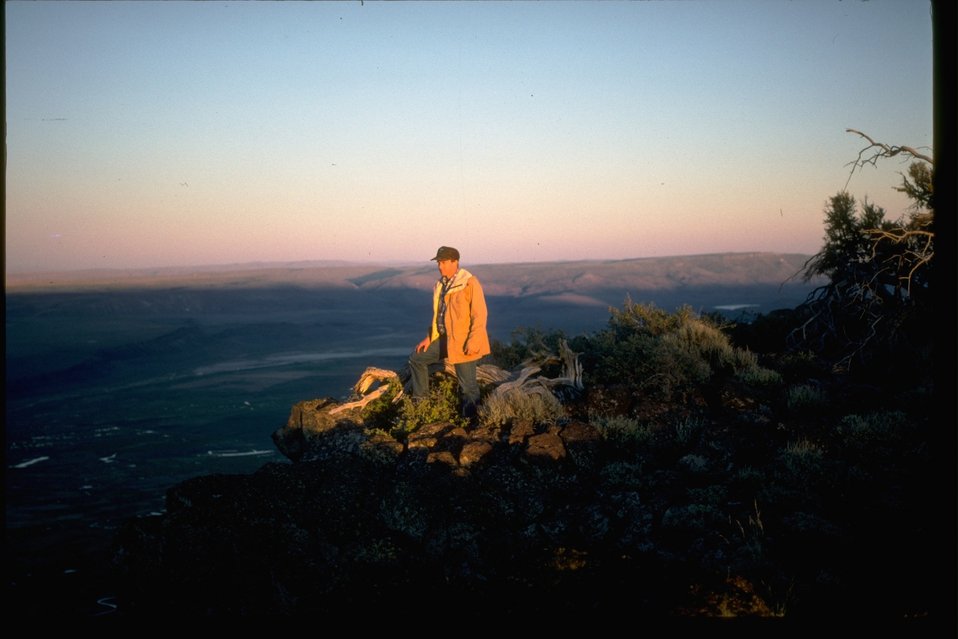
Dave Harman in pool of evening light looking out over rim at the Fish Creek Rim. OR 1-117